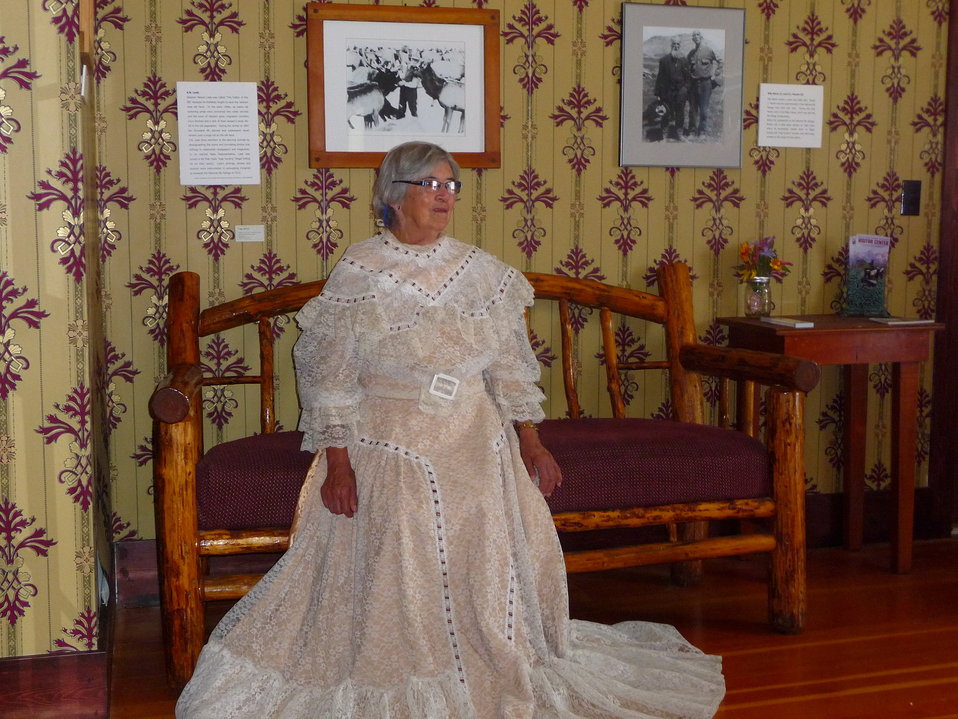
Dress-Up Isn't Just for Kids

Period costumes, on loan from the Jackson Hole Playhouse, were available at the Historic Miller House during the National Elk Refuge's centennial weekend. Here, a woman tried on a gown and created a vision of an earlier era.

Credit: USFWS / Chuck Mulcahy, National Elk Refuge volunteer